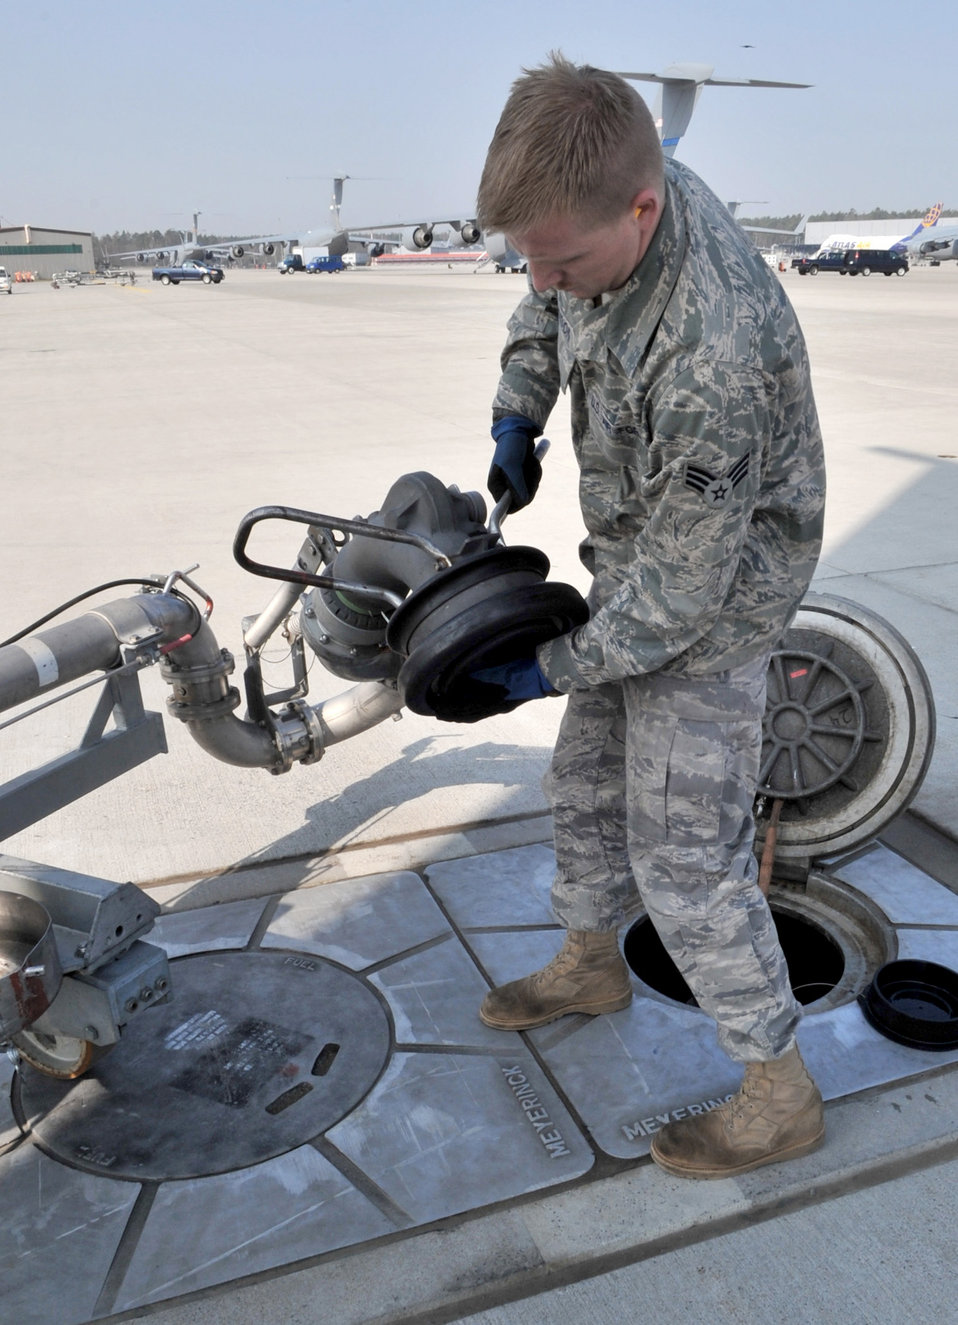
Aircraft ready for Odyssey Dawn

Senior Airman Hursel Johnson makes preparations to refuel a KC-135 Stratotanker March 29, 2011, at Ramstein Air Base, Germany, in support of Operation Odyssey Dawn. Johnson is a fuels distribution operator assigned to the 86th Logistics Readiness Squadron.